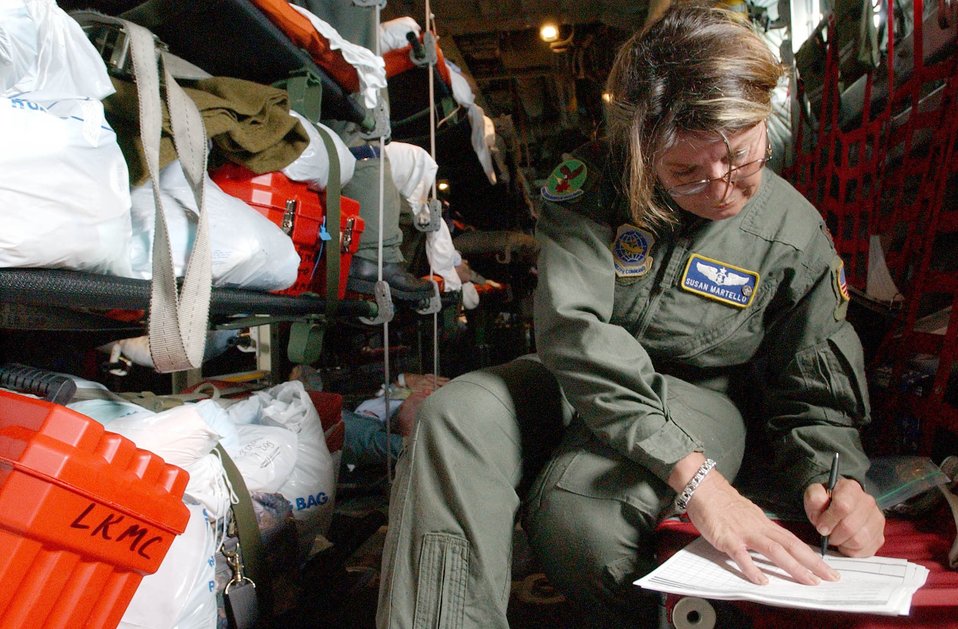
Hurricane Rita Support

SEBRING AIRPORT, Fla. - Maj. Susan Martello, a nurse assigned to the North Carolina Air National Guard's 156th Aeromedical Squadron, goes over some medical charts onboard a C-130 that was transporting more than a dozen patients Sept. 23 back home to Key West, Fla. The patients were kept in Sebring, Fla. while Hurricane Rita passed the Florida Keys.